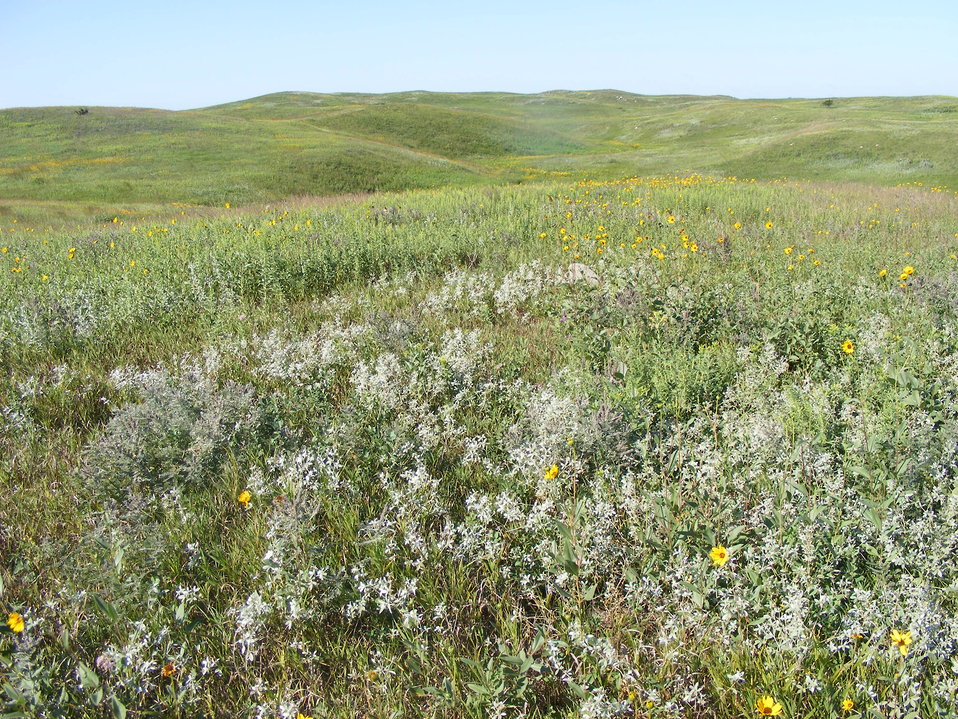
Prairie hills

The Prairie Coteau Region of South Dakota is generally too hilly and rocky for farming thus providing wonderful habitat for species that depend on grasslands, especially native prairie. Meyer Lake Waterfowl Production Area in Grant County, SD.